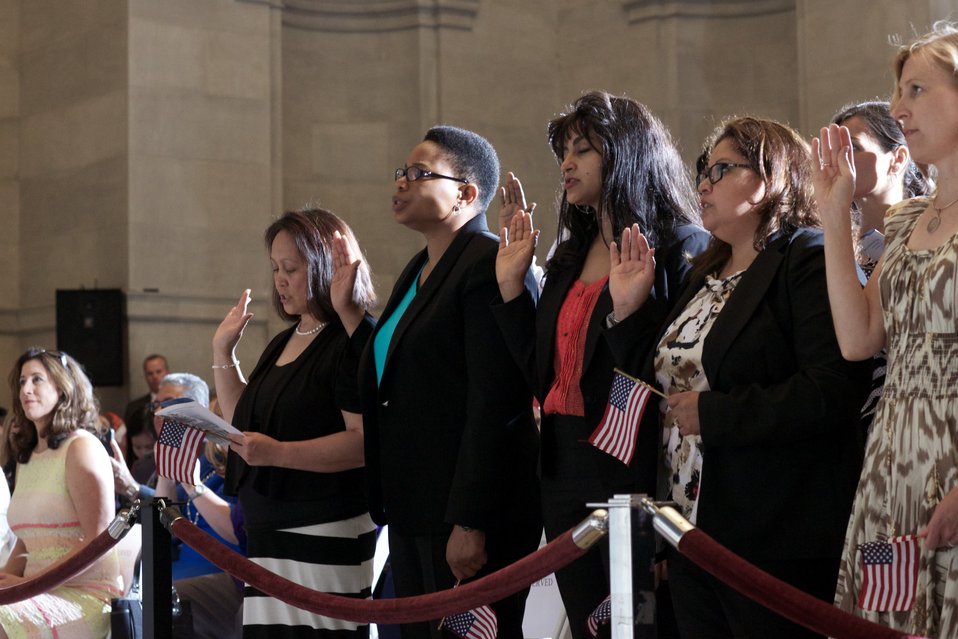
Naturalization Ceremony with Michelle Obama